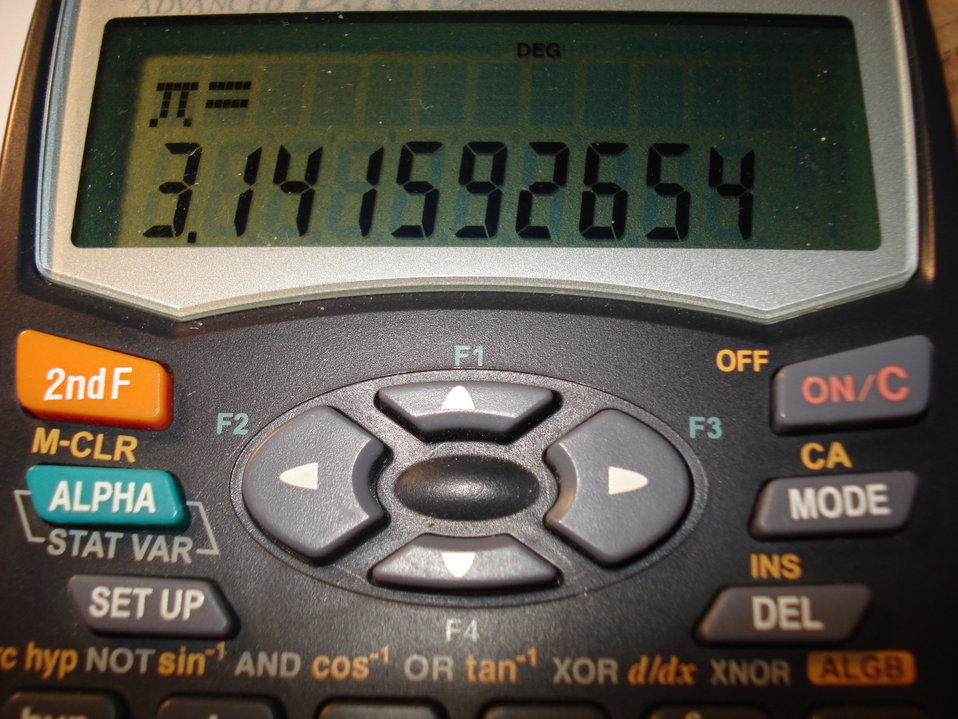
i took this picture for a class - shows a calculator with digits of pi